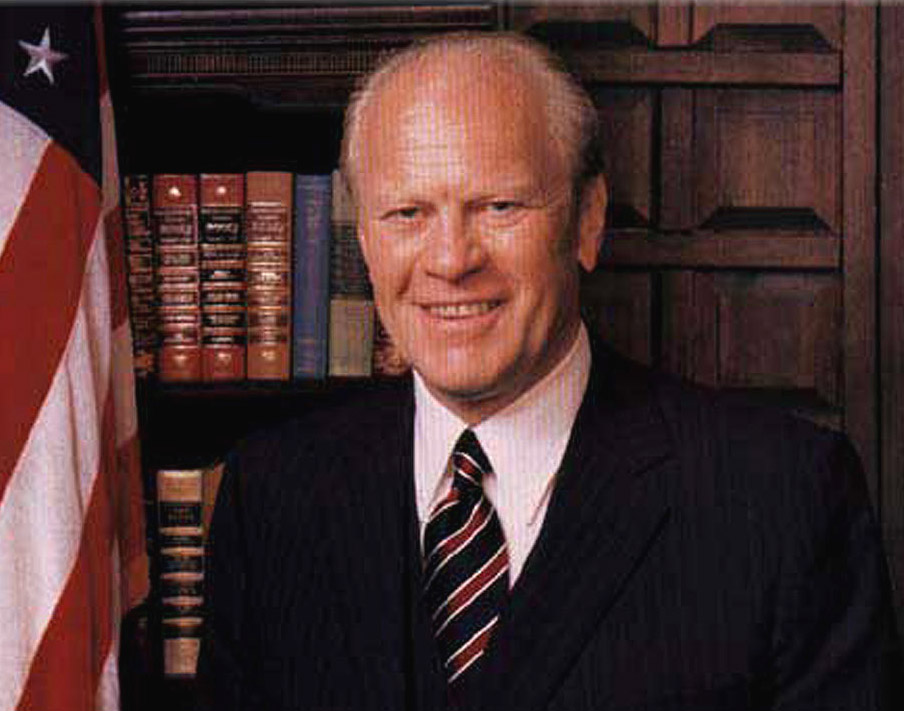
President Gerald R. Ford, 38th president of the United States